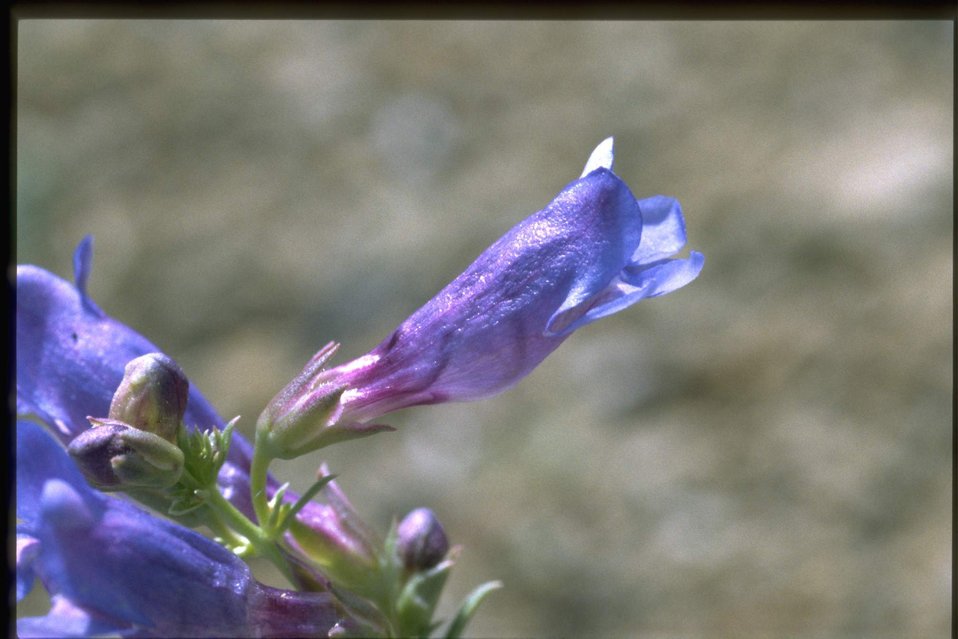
Closeup shot of Penstemon wildflower.